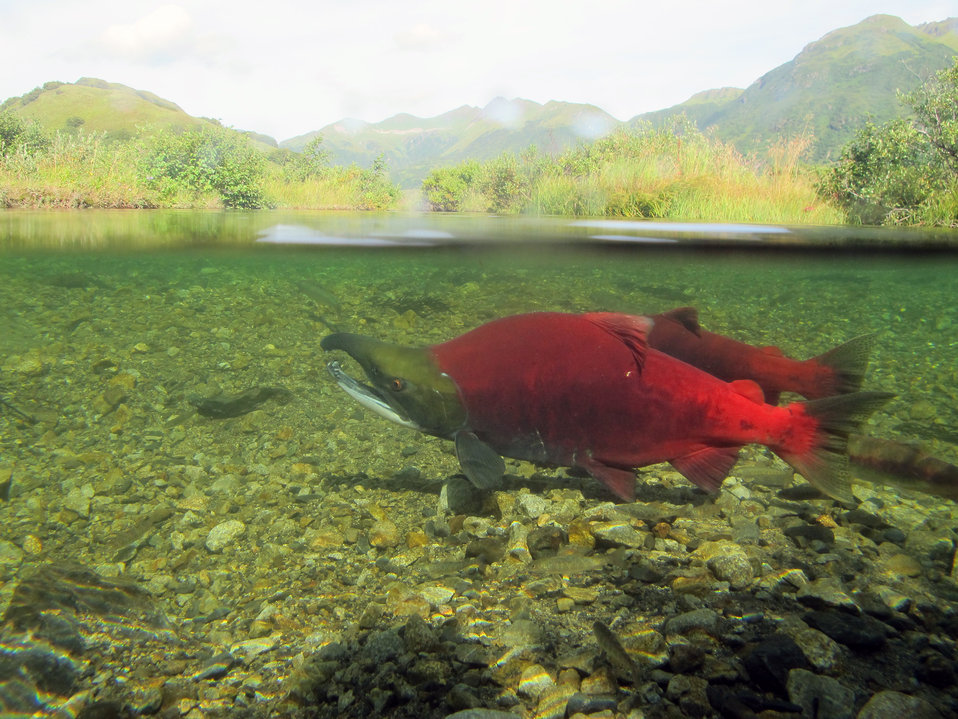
sockeye spawners

A pair of spawning salmon, tailed by a sneaky jack near Pasagshack, Kodiak, Alaska. USFWS/Katrina Mueller